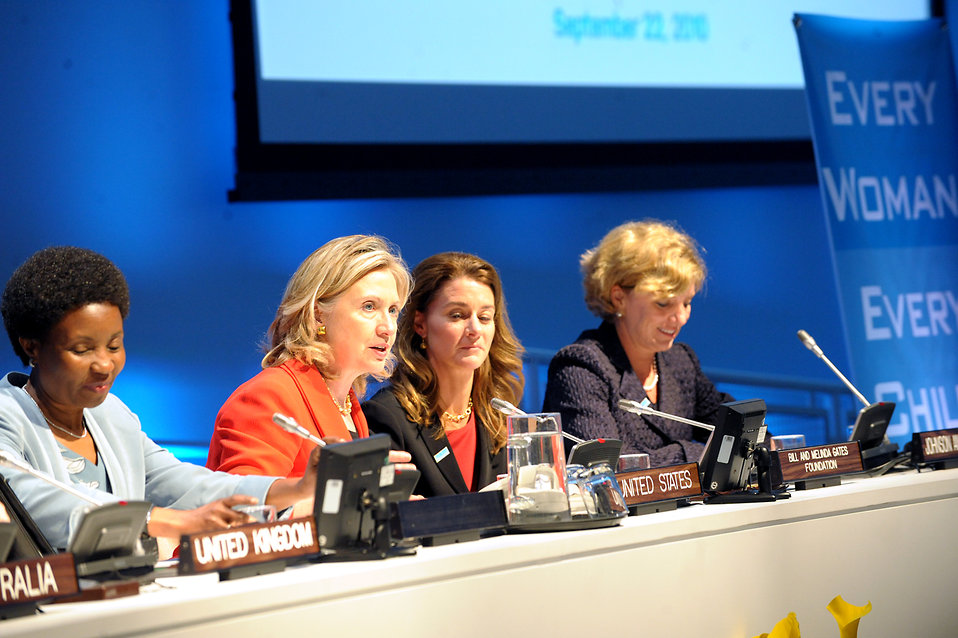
Secretary Clinton Participates in the 'Every Woman, Every Child' Event

U.S. Secretary of State Hillary Rodham Clinton participates in the 'Every Woman, Every Child' event at the UN North Lawn Building ECOSOC Chamber in New York, New York, on September 22, 2010.